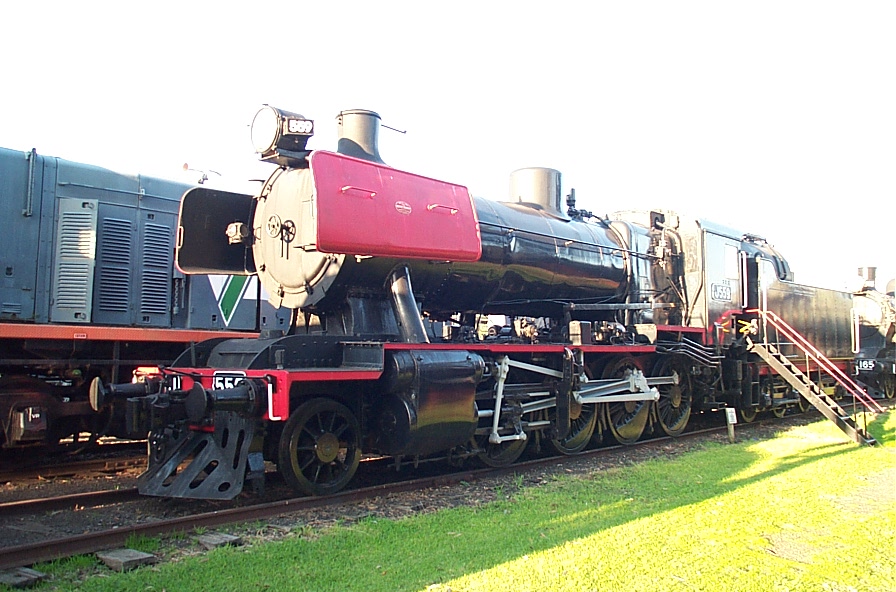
Preserved Victorian Railways J class steam locomotive J 556, preserved at the ARHS North Williamstown Railway Museum. The locomotive wears the plates of scrapped J 559, the last steam locomotive to enter service on the VR.